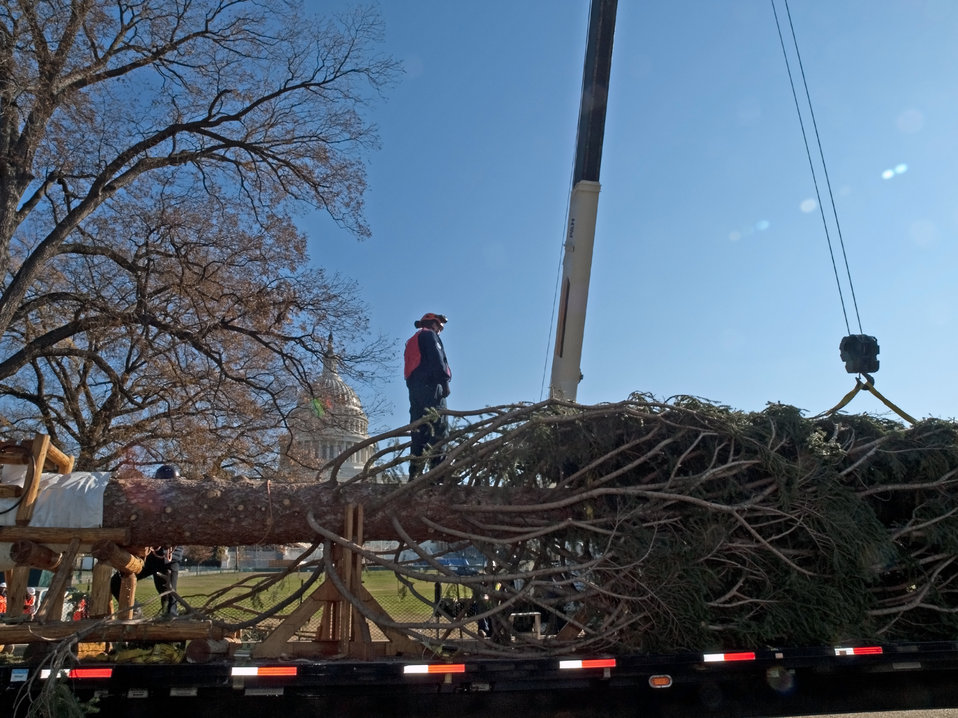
Members of the Capitol grounds crew move the 2012 Capitol Christmas Tree from its truck after it arrived in Washington, D.C. on Nov.26, 2012. The 73-foot Englemann spruce traveled from the White River National Forest in Colorado.